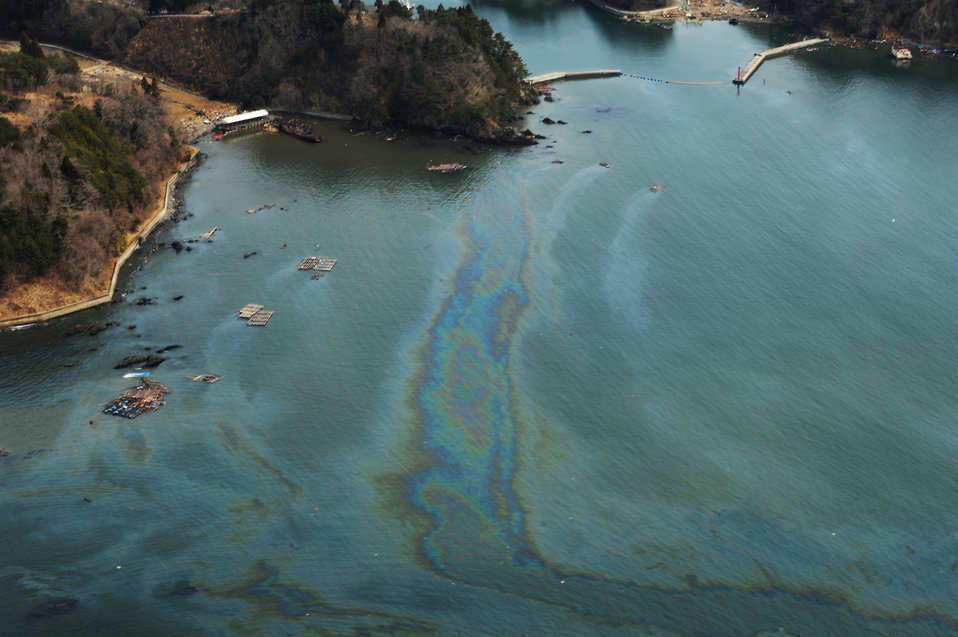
Rescue team mission

Rescue team members in an HH-60 Pave Hawk conduct search operations over Japan, March 25, 2011, in support of Operation Tomodachi.